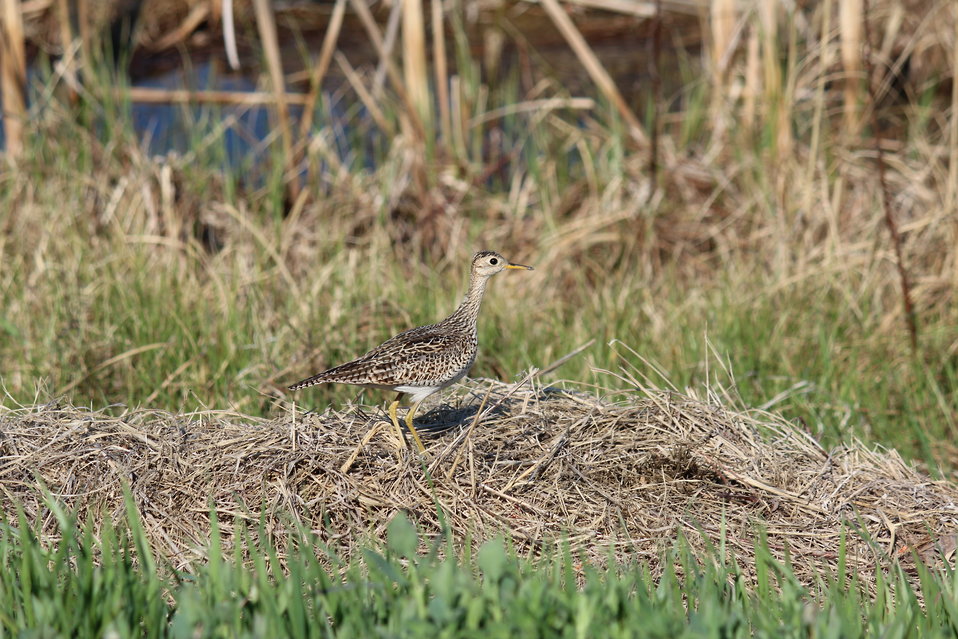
Upland Sandpiper Near A Wetland

This Upland Sandpiper was spotted near a potential FWS wetland easement acquisition.

Location Long Lake WMD, Burleigh County, North Dakota

Credit: Doug Mosser / USFWS

Photo Contest Entry #164